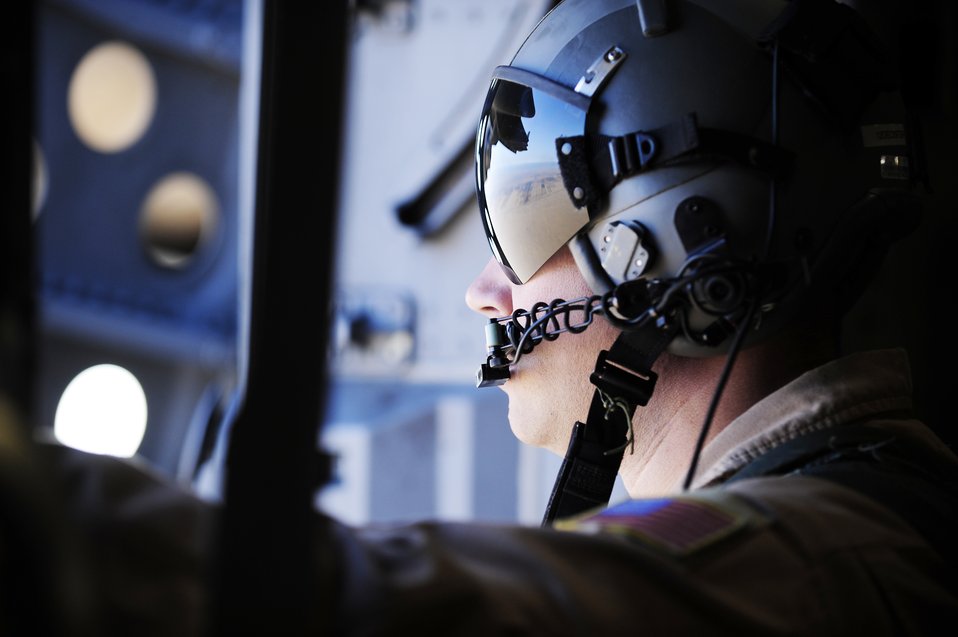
Friendship jump over Egypt

Staff Sgt. Gabriel Reams surveys the drop zone near Cairo from a C-17 Globemaster III Oct. 15, 2009, during Exercise Bright Star. He is a loadmaster with the 8th Airlift Squadron at McChord Air Force Base, Wash.